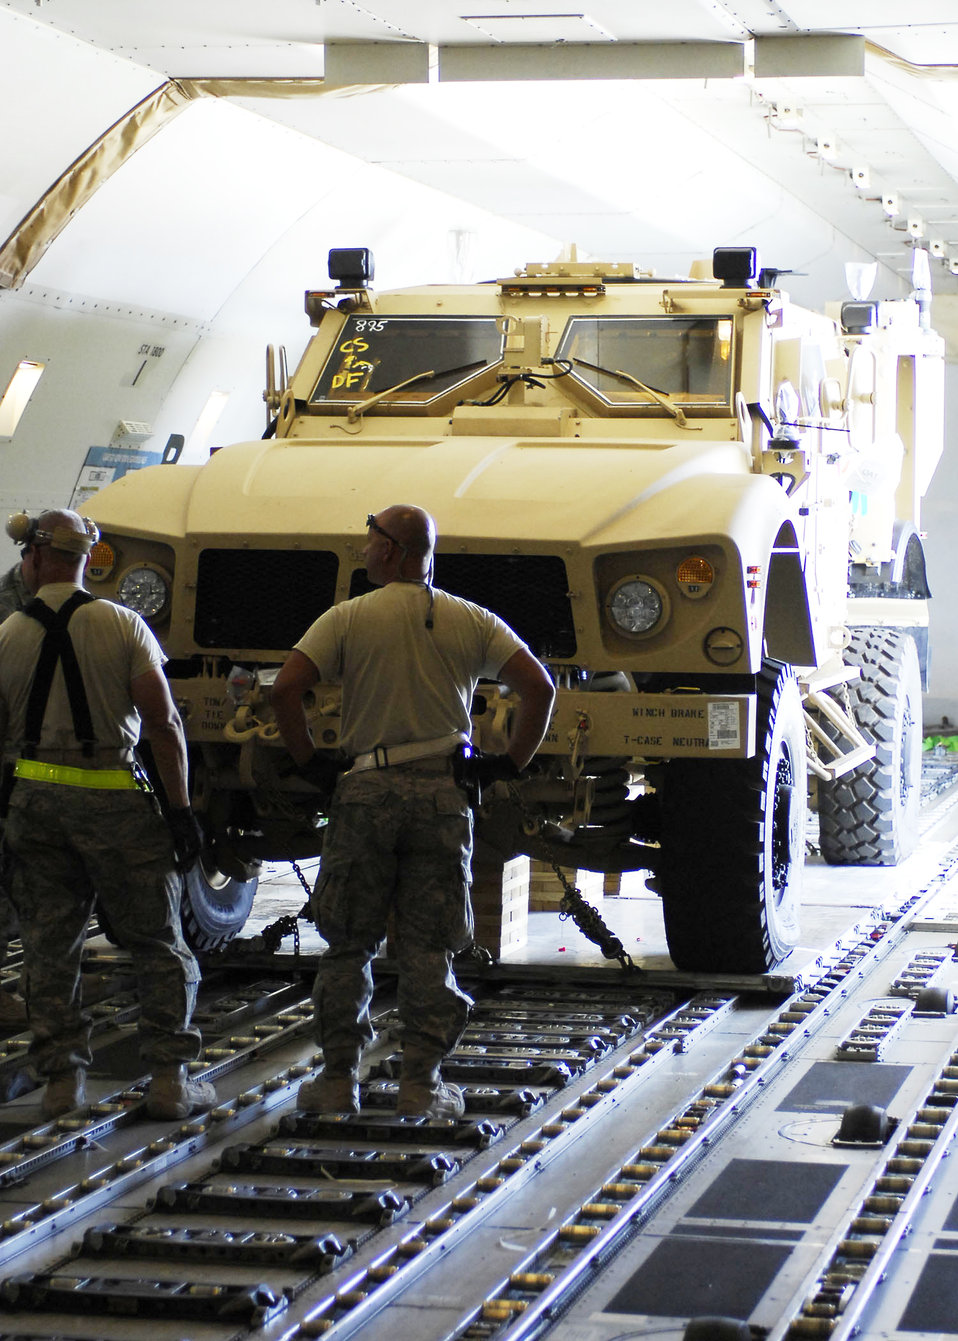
Airmen leave a footprint in Afghanistan

Airmen wait to unload a multipurpose all-terrain vehicle from a Boeing 747 Nov. 9, 2009, at Bagram Airfield, Afghanistan. The M-ATVs support mounted patrols, reconnaissance, security, convoy protection, communications, command and control, and combat service support. The M-ATV is designed to replace the up-armored Humvee in Afghanistan. The Airmen are assigned to the 455th Expeditionary Aerial Port Squadron.